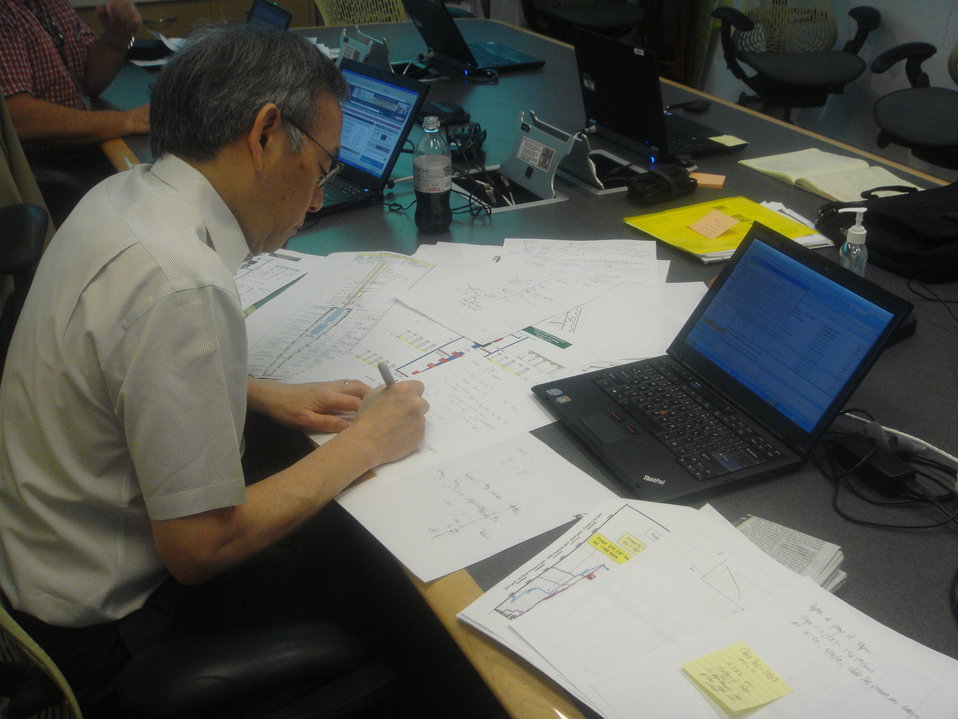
U.S. Energy Secretary Steven Chu works on flow and resistance calculations as part of the 'top kill' attempt.